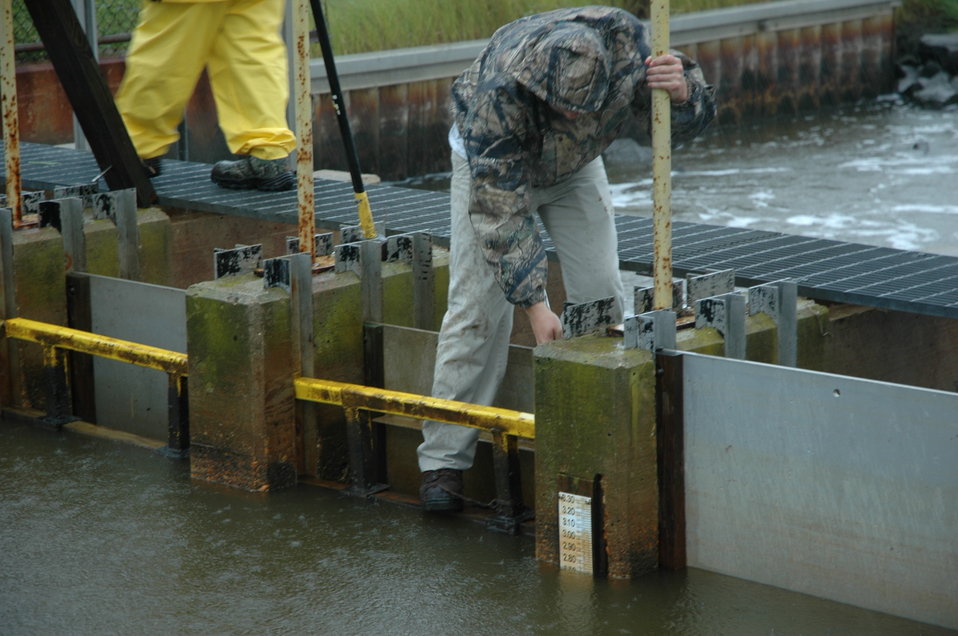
YCC Water Level Control

The YCC crew monitors water levels at Prime Hook National Wildlife Refuge.